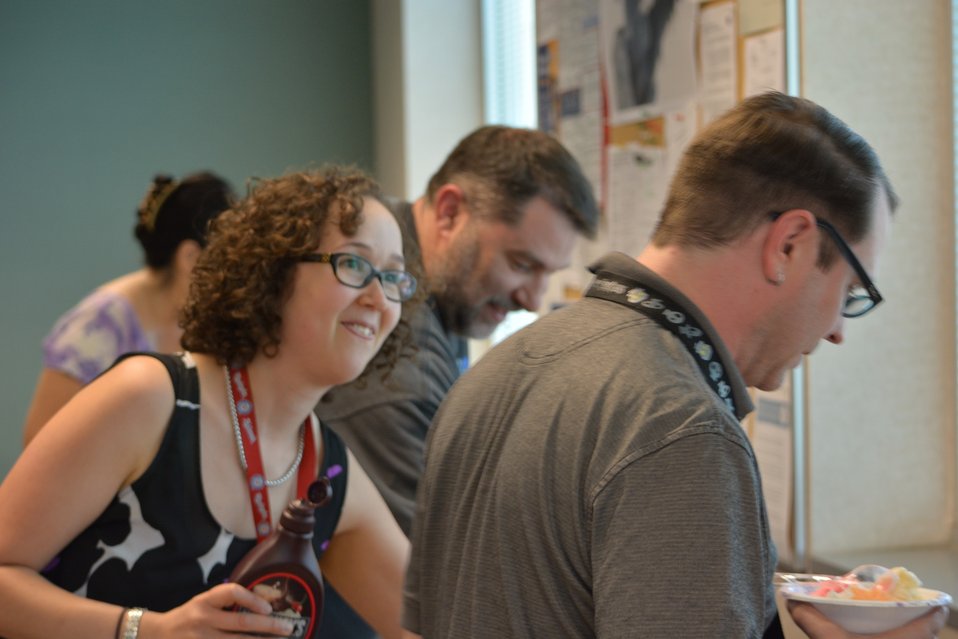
Staff build ice cream sundaes at staff celebration event - (l to r) Lynn C. Nashorn, Michael J. Kretch, Jr., Aaron C. Prah; Location: Riverside Facility, Perris, CA